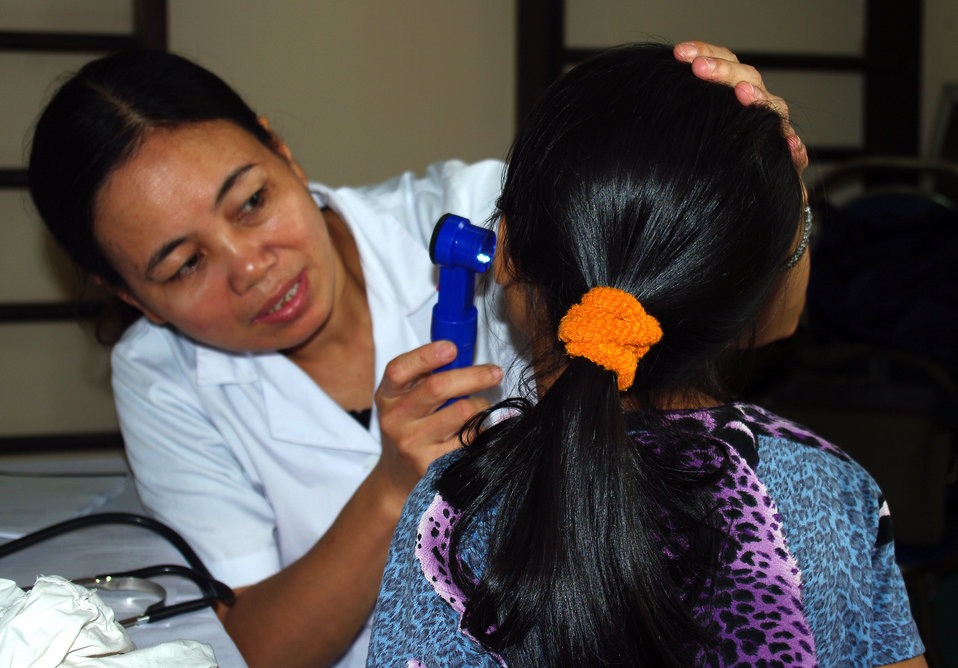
Oprhans and vulnerable children receive free medical check-ups in Hanoi